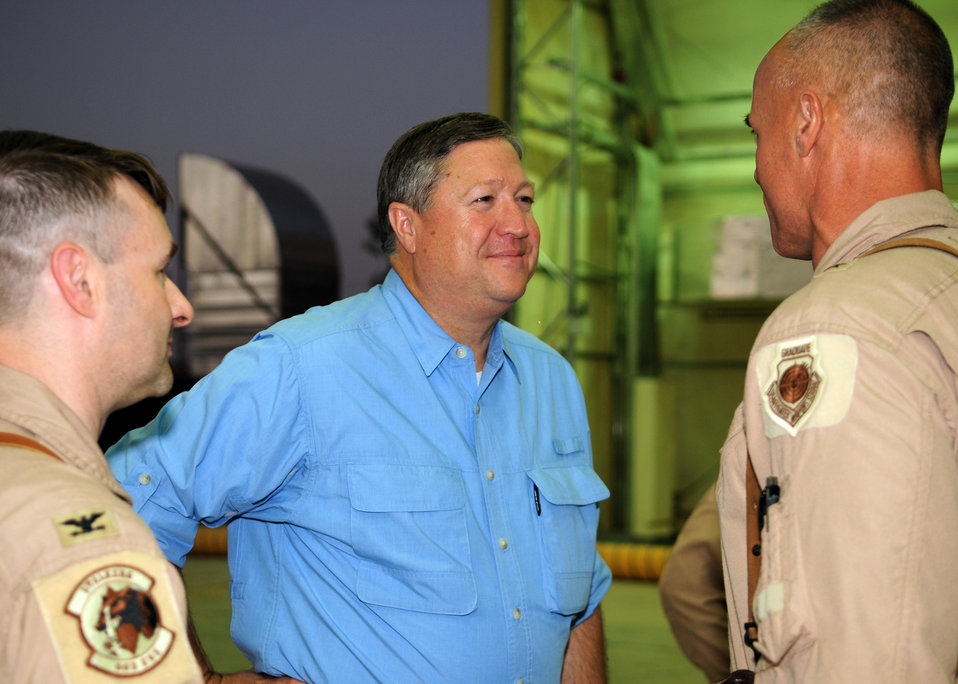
Secretary Donley tours Joint Base Balad

Secretary of the Air Force Michael Donley discusses on-going operations with Col. Luke Grossman (left), 332nd Air Expeditionary Wing vice commander, and Brig. Gen. Craig Franklin, 332nd AEW commander, Aug. 27 during a tour of the MC-12 Liberty aircraft hangar at Joint Base Balad, Iraq. The 332nd AEW employs the spectrum of airpower capability throughout the Iraqi theater of operations in support of ground forces and Iraqi capacity-building, including strike; airlift and airdrop; combat search and rescue; aeromedical evacuation; and intelligence, surveillance and reconnaissance. Secretary Donley visited the base to meet with the Airmen there and to get a first-hand look at the 332nd AEW's diverse mission.